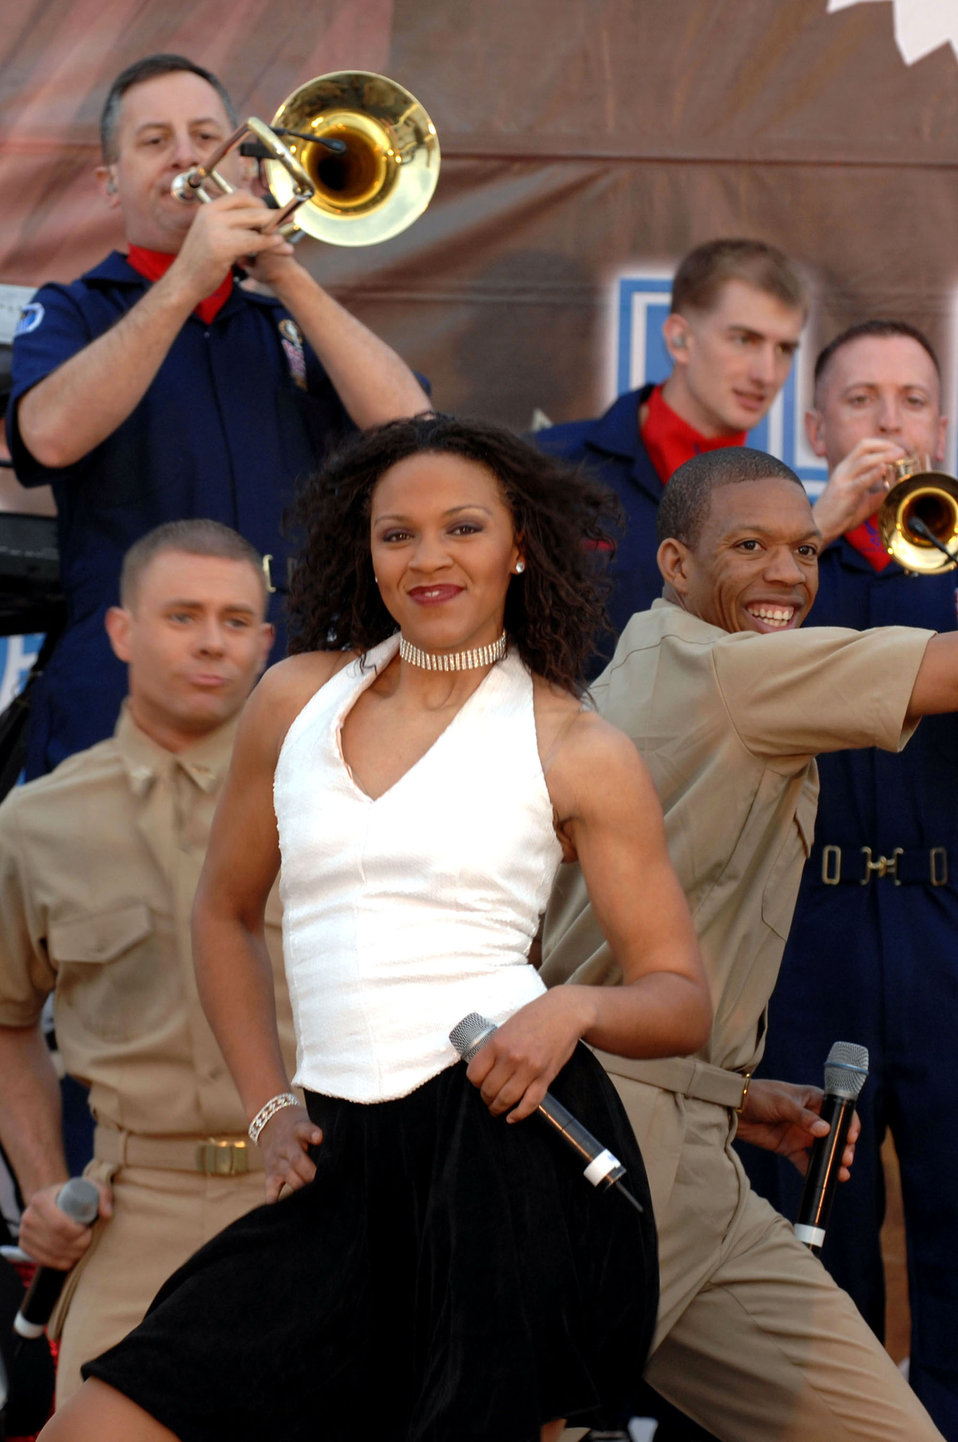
Tops in Iraq

Tops in Blue members perform for Airmen and Soldiers April 26 at Kirkuk Air Base, Iraq. Tops in Blue's goal is to enhance mission productivity for Air Force members around the world. Tops In Blue Airmen perform an average of 120 performances at 100 locations worldwide each year.